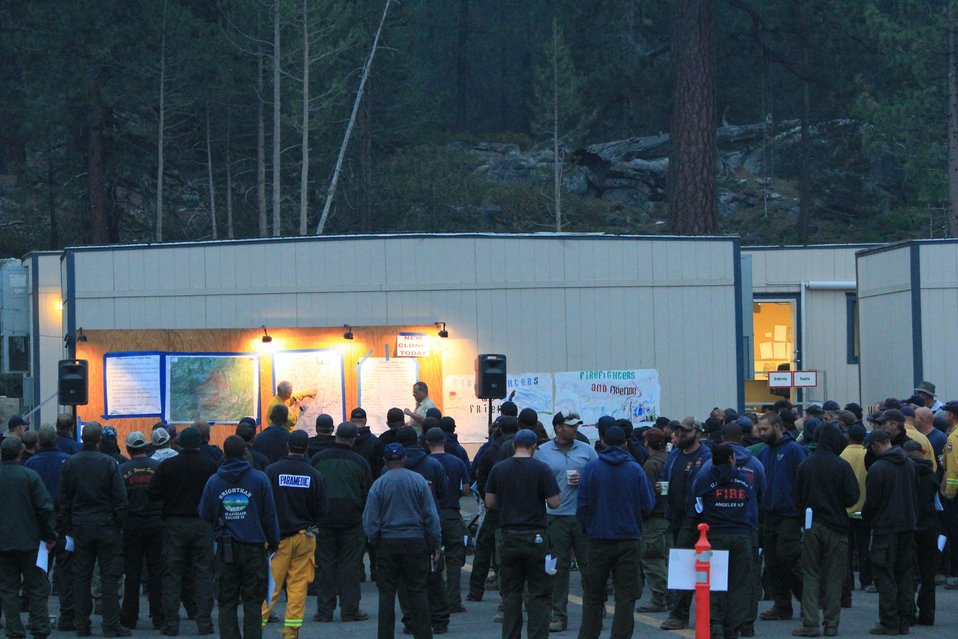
Fire crews listen to the operations chief talk about the fire operations plan for the day against the Aspen Fire. The Aspen Fire in the Sierra National Forest near Big Creek, CA began on Jul. 22, 2013 by lightning and has consumed approximately 1, 400 acres and is approximately 20% contained.